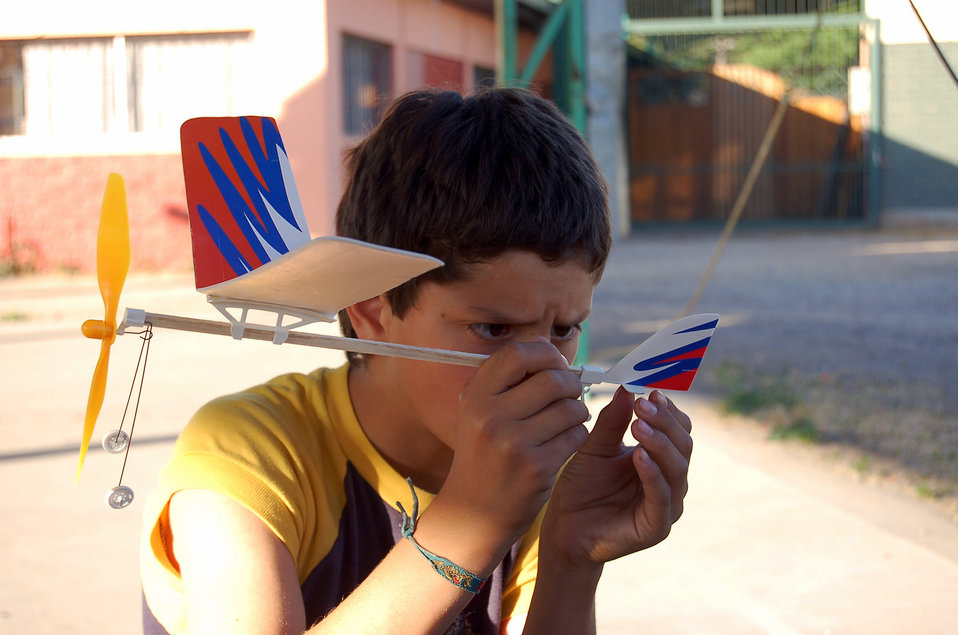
Airmen spend day with Chilean children

A Chilean boy inspects a model airplane he constructed Oct. 30 at a home for abused or neglected children near Santiago, Chile. Airmen visited the home while they are providing intensive, periodic subject-matter exchanges in the U.S. Southern Command area of focus. Besides helping construct the model airplanes, the Airmen held a cooking exchange where the children were treated with baked treats of carrot and red Velvet cakes.